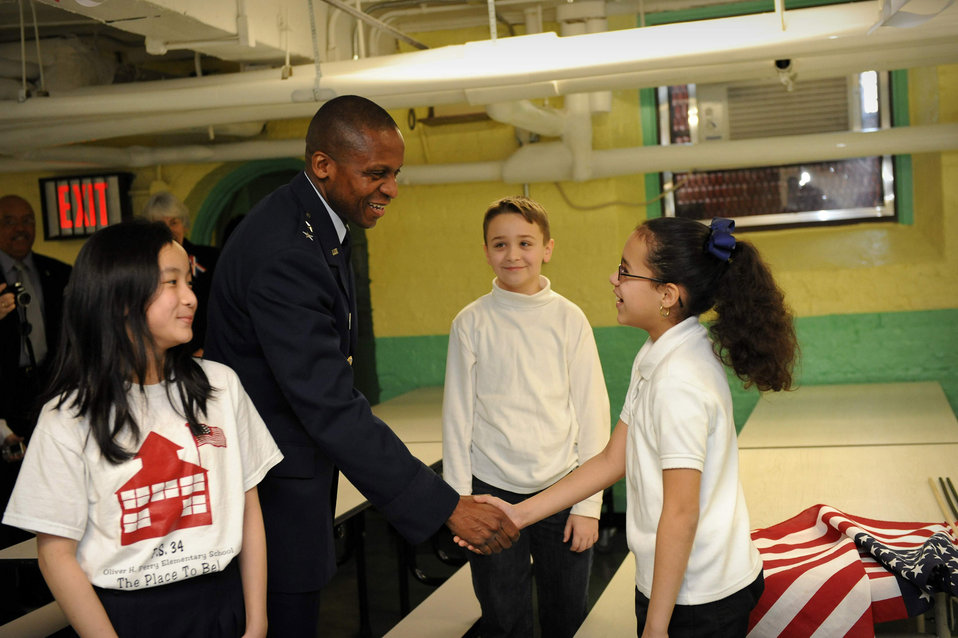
Generals re-enforce 'citizenship day' with core values

Maj. Gen. Darren W. McDew congratulates Public School 34 students after doing an outstanding job of presenting the colors at a citizenship day event at the Brooklyn, NY, school Feb. 11. General McDew is the director of Public Affairs, Office of the Secretary of the Air Force.